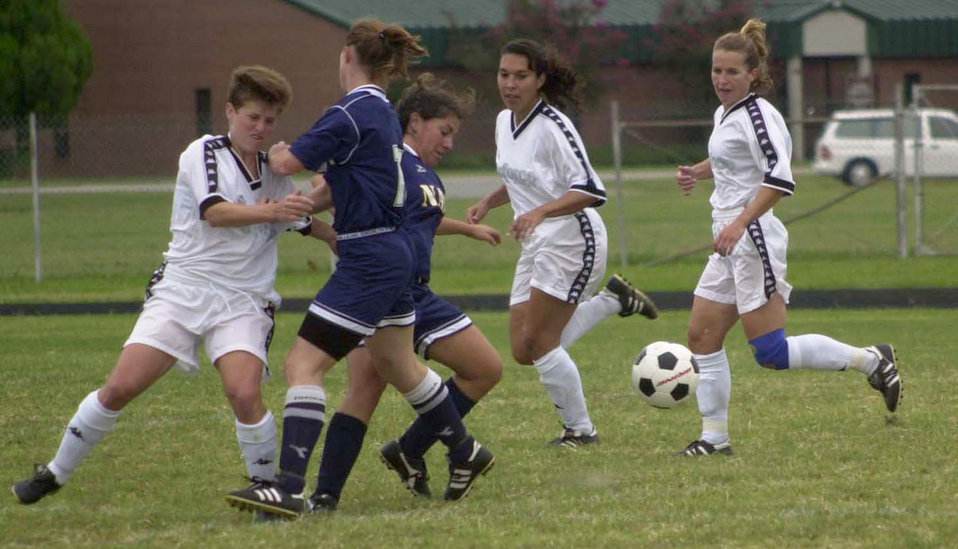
Soccer gals

FORT EUSTIS, Va. -- Air Force soccer players push the ball past a trio of Marines. The Air Force team recently won the week-long women's Armed Forces soccer championship held here.